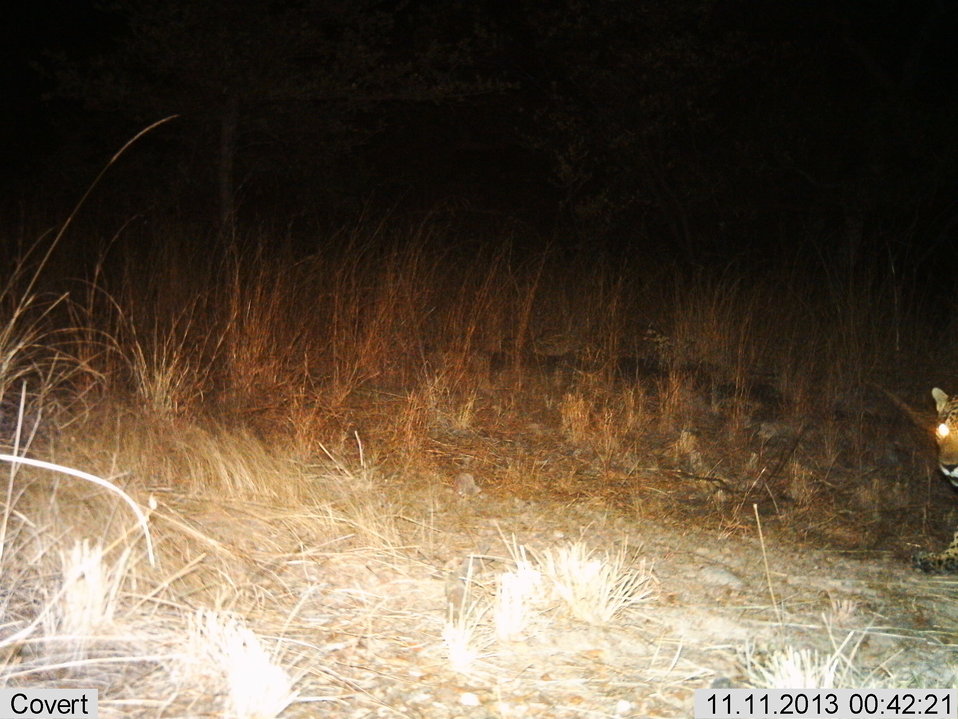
Male jaguar photographed by automatic wildlife cameras in the Santa Rita Mountains on November 11, 2013, as part of a U.S. Fish and Wildlife Service/Department of Homeland Security-funded jaguar survey conducted by University of Arizona. The jaguar has been photographed previously at this location.